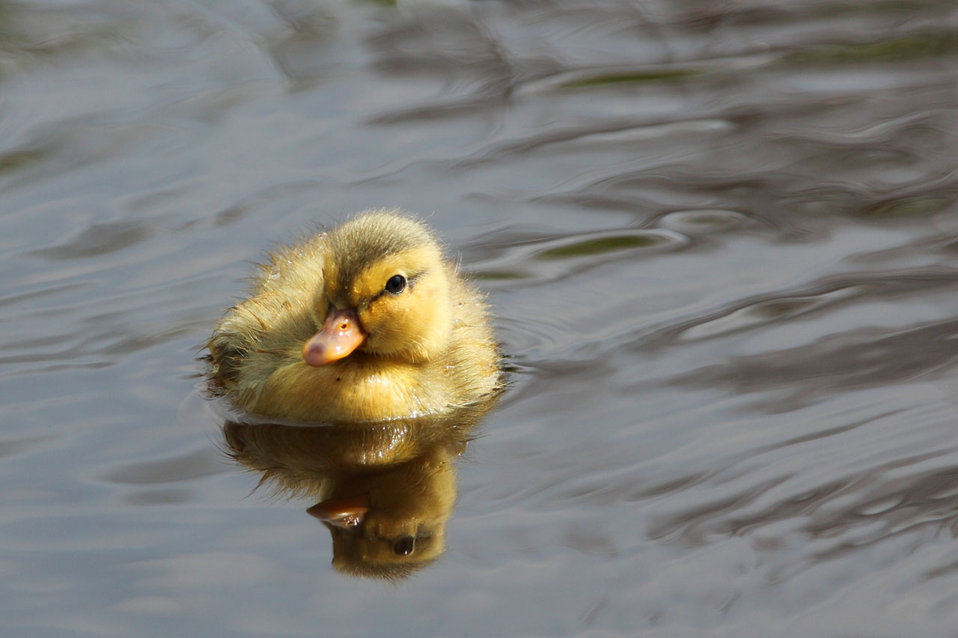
Duckling

Baby duck in water.